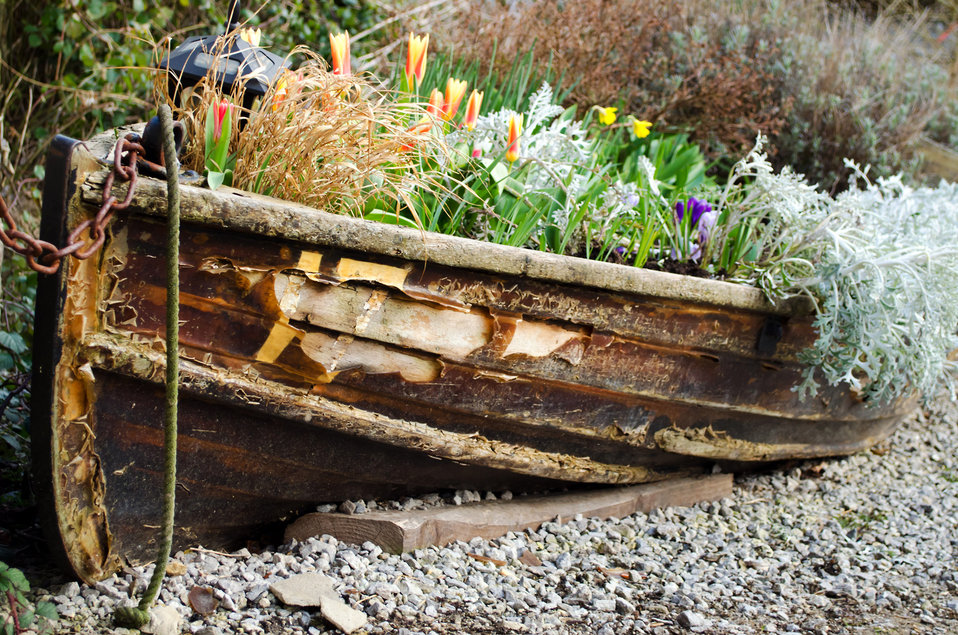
Old ship full of flowers.